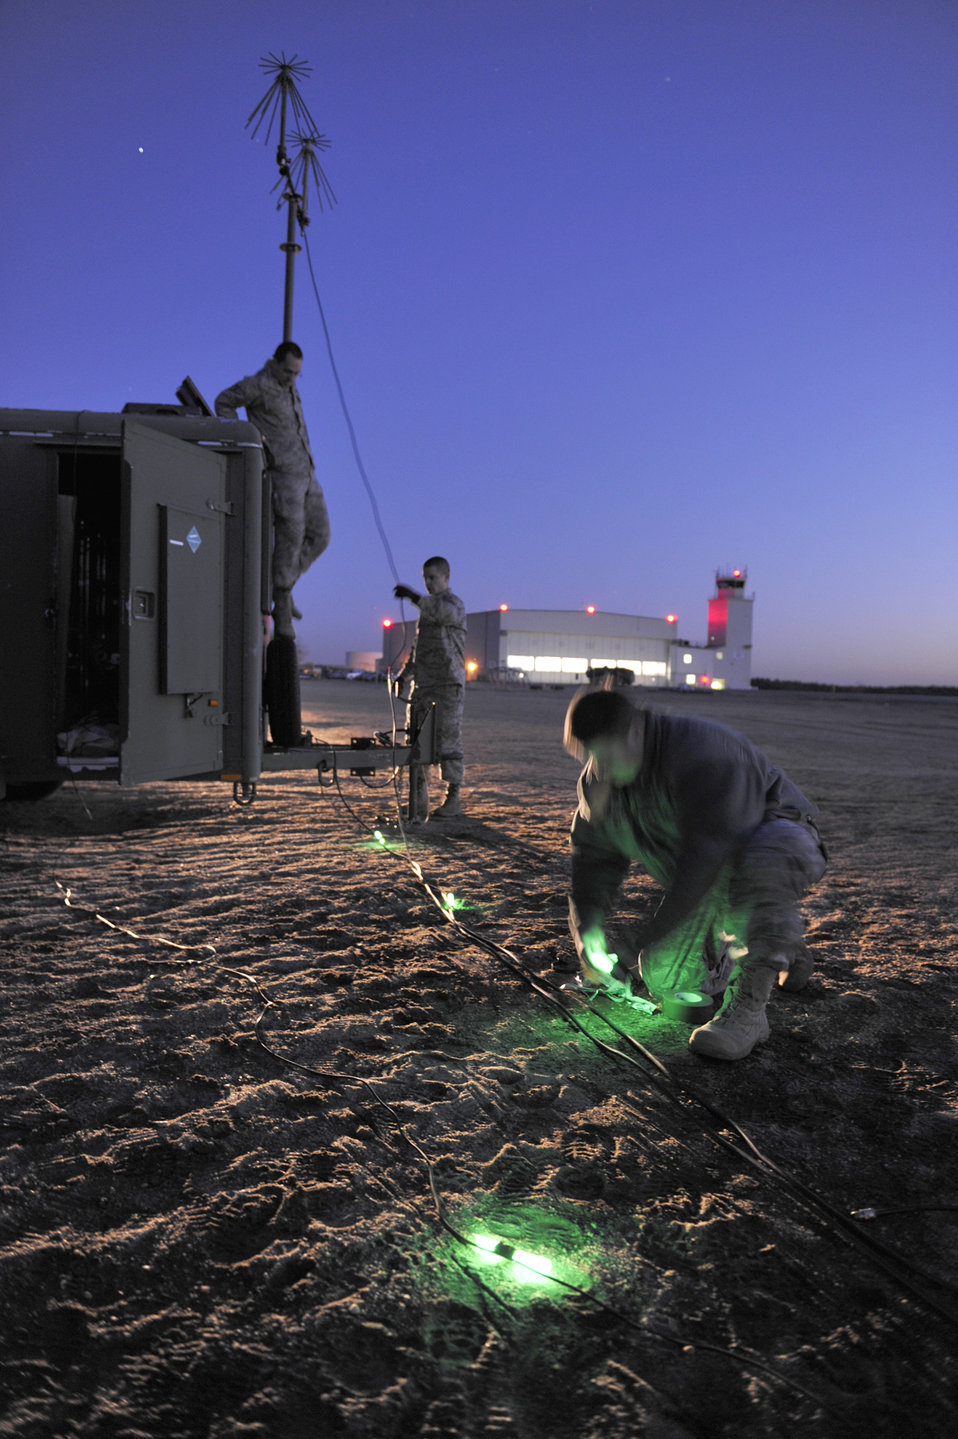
Field training exercise

Airmen from the 621st Contingency Response Wing run high-frequency antenna lines during a field training exercise Feb. 23, 2011, at Joint Base McGuire-Dix-Lakehurst, N.J.